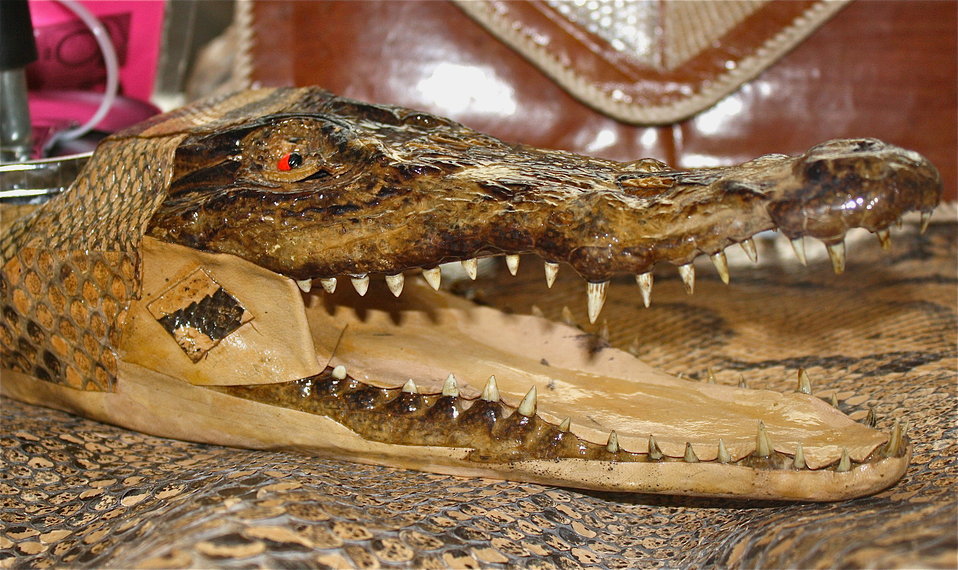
Crocodile Ashtray